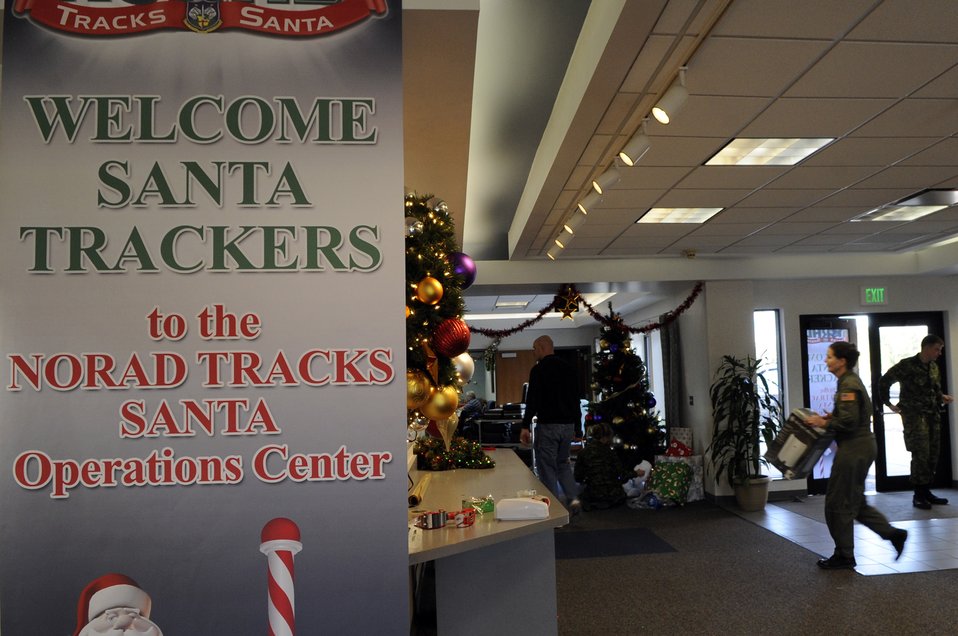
Santa Claus is coming to town

Military members from the U.S. and Canadian air forces help set up the North American Aerospace Defense Command Tracks Santa Operations Center Dec. 22 at Peterson Air Force Base, Colo.